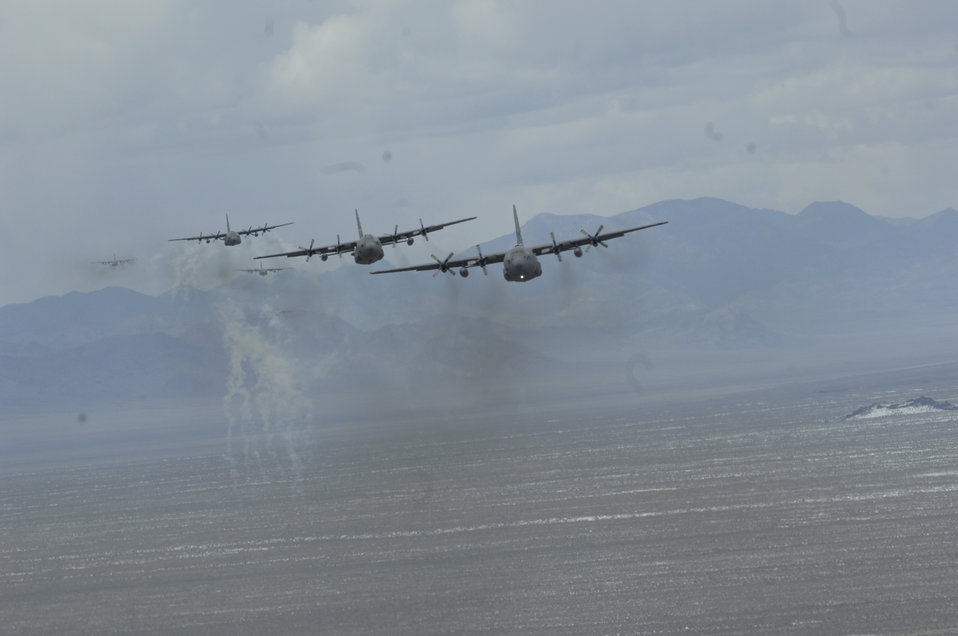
Mobility exercise

A formation of C-130 Hercules flies May 18, 2011, during an exercise above the Nevada Test and Training Range.